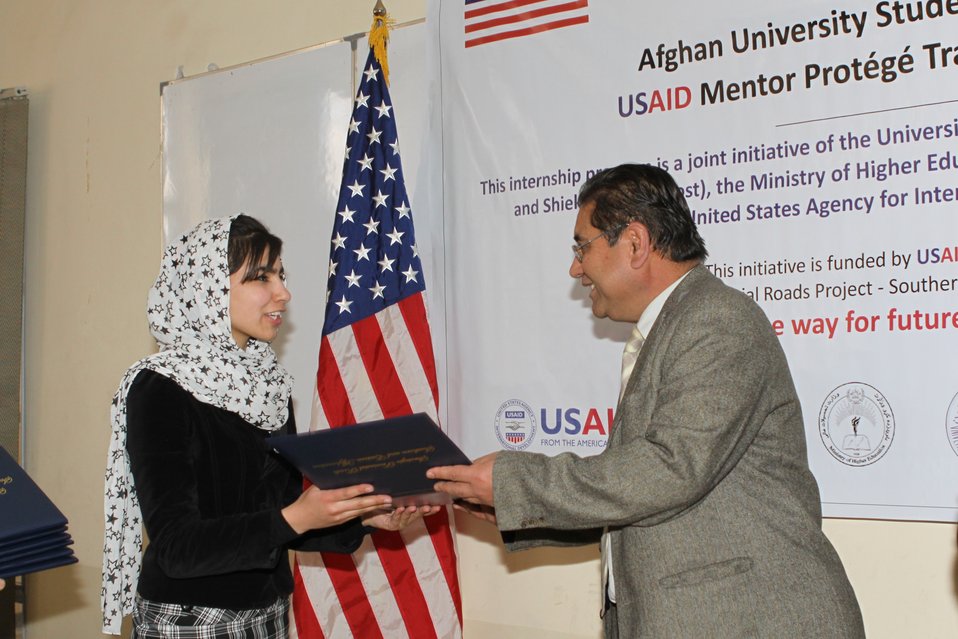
Female University Students Complete Internship

Kabul, Afghanistan | March 16, 2011 – In response to a demand for qualified Afghan engineers, Kabul University celebrated completion of an intensive five-month Mentor Protégé Training Program today by 10 female fourth year university students. The Training Program is a joint effort between the Government of the Islamic Republic of Afghanistan, the U.S. Agency for International Development (USAID), and the Universities of Kabul, Kandahar, Alberoony in Kapisa, Shiekh Zayed in Khost. The graduation ceremony highlighted collaboration with these national institutions in building the technical skills of young Afghans, made possible by USAID.

Four of the interns are engineers, while the remaining six are from the faculties of computer science, economics, and psychology.

Speaking about the event, H.E. Minister of Public Works Abdul Qudus Hamidi said, “The future of Afghanistan lies in developing the skills of our youth, and the engineering skills of these graduates today represent a small but important step forward for the country.”

Keynote speakers at the ceremony included H.E. Deputy Minister of Higher Education Abdul Rahim; USAID Senior Deputy Mission Director Robert Hellyer; and Chancellor of Kabul University Professor Hamidullah Amin. Approximately 150 people, including current and former students attended the graduation.

Launched last year, the Mentor Protégé Training Program has provided qualifying students the opportunity to intern with USAID’s Strategic Provincial Roads-South and East Afghanistan project and gain practical experience in a real work environment. The goal of the program was to offer interns the opportunity to gain hands-on experience to reinforce their formal studies. A total of 30 students from four national universities have benefitted from this program.

“The promotion of women’s rights is integrated into the overall U.S. Government development strategy and can be found in key programs, including education, healthcare, security, rule of law, political participation, agriculture, and economic development,” said Robert Hellyer. “The U.S. Government is committed to the Afghan leadership of programs that directly enhance development, particularly as it relates to women’s issues.”

This event also highlighted the learning achievements of students and emphasized the importance of hands-on internship programs. The curriculum is designed to instill students with the knowledge and confidence to qualify for engineering positions upon completion of their fourth year at their respective universities.